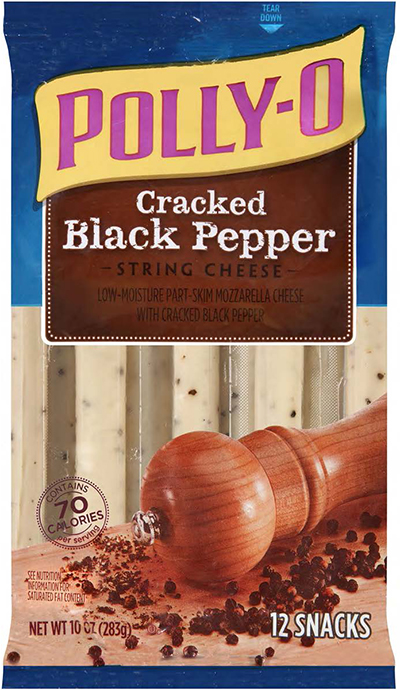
RECALLED – Cheese

October 25, 2013 – Product Recall – Kraft Voluntarily Recalls Some Varieties of Kraft And Polly-O String Cheese And String Cheese Twists Due to Premature Spoilage.